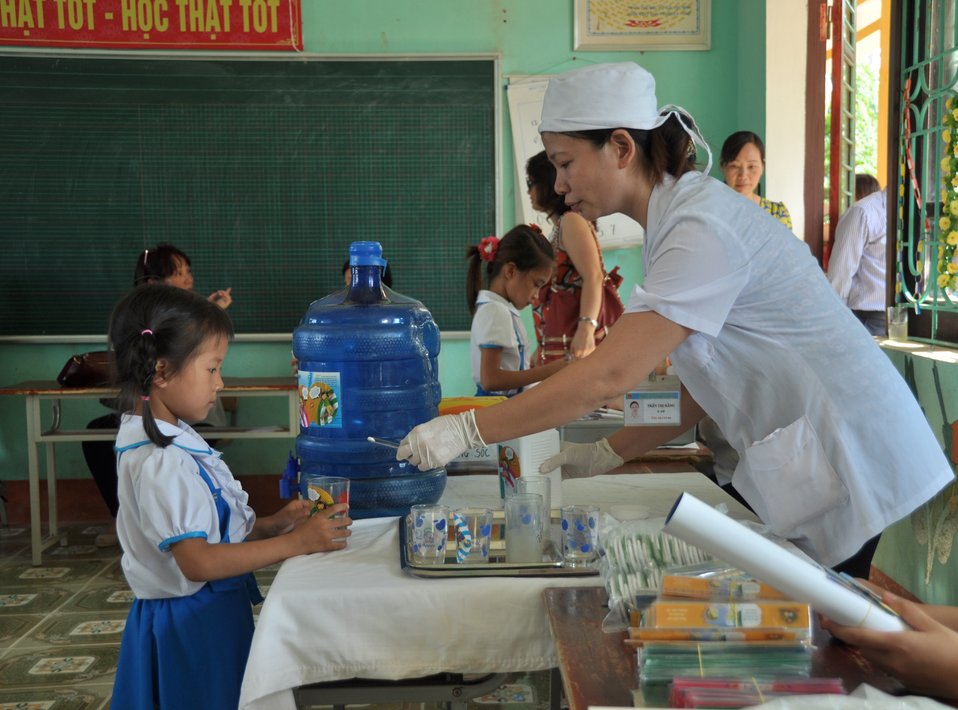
USAID supports deworming education and medication distribution in Bac Giang Province

May 20, 2013